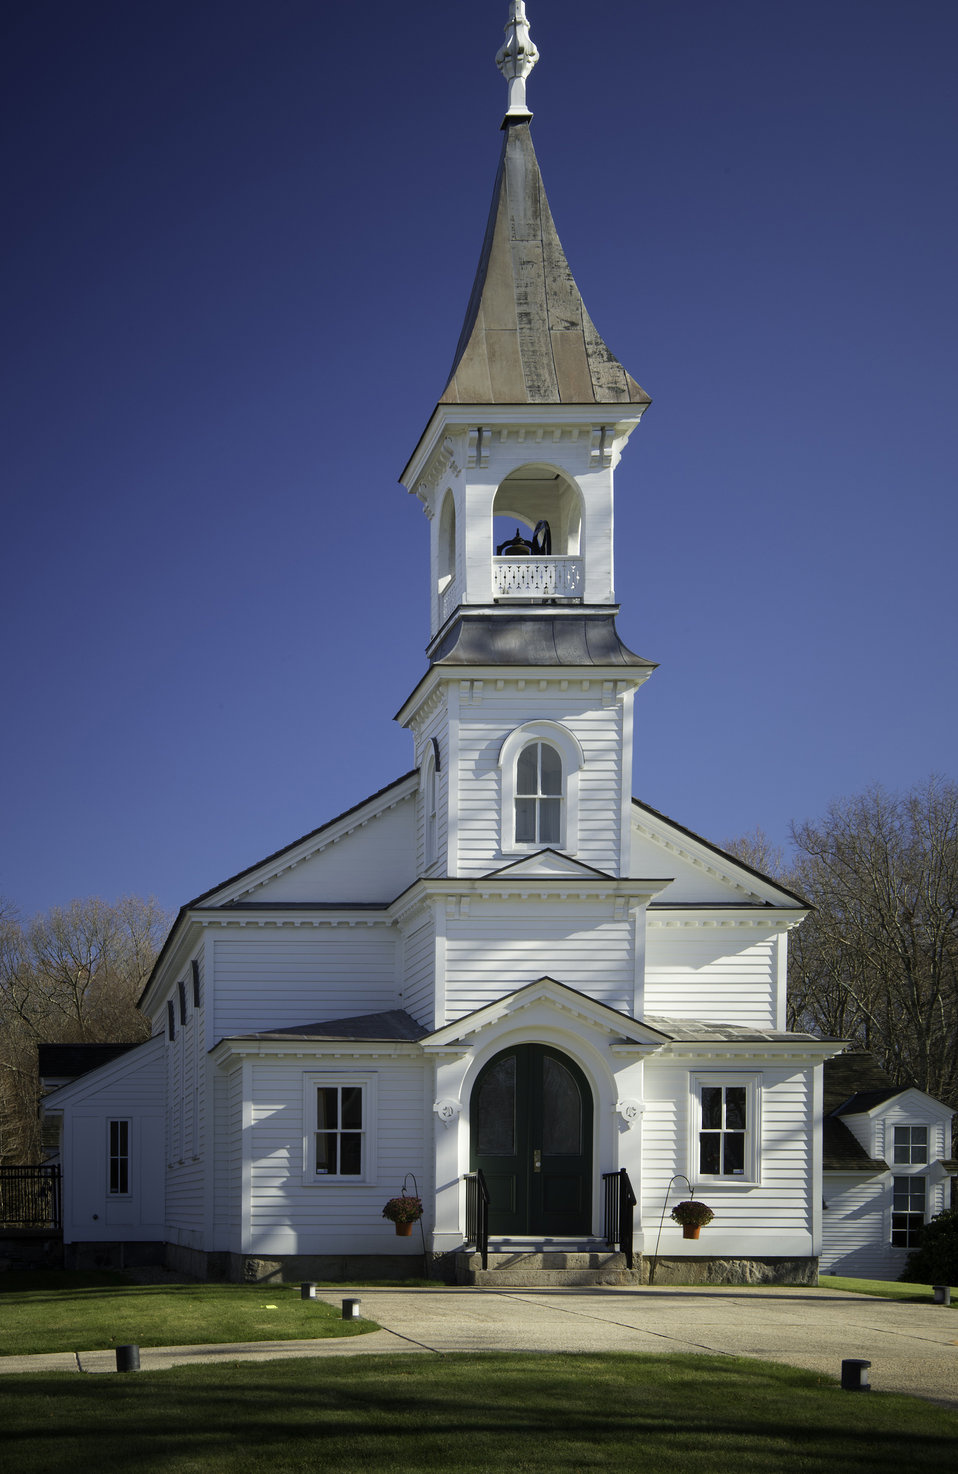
Lucy Occom Tantaquidgeon, her daughter Lucy Tantaquidgeon Teecomwas, and her granddaughter Cynthia Teecomas Hoscoat deeded a plot of land on Mohegan Hill in 1831 to tribal ownership for the building of the Mohegan Congregational Church. The church sits on a half-acre of continuously owned tribal land. Proving the Mohegan Tribe’s ownership of that plot of land and proving the female line of leadership that began with Lucy Occom was critical to the Tribe’s successful petition for reinstatement of federal recognition in 1994.